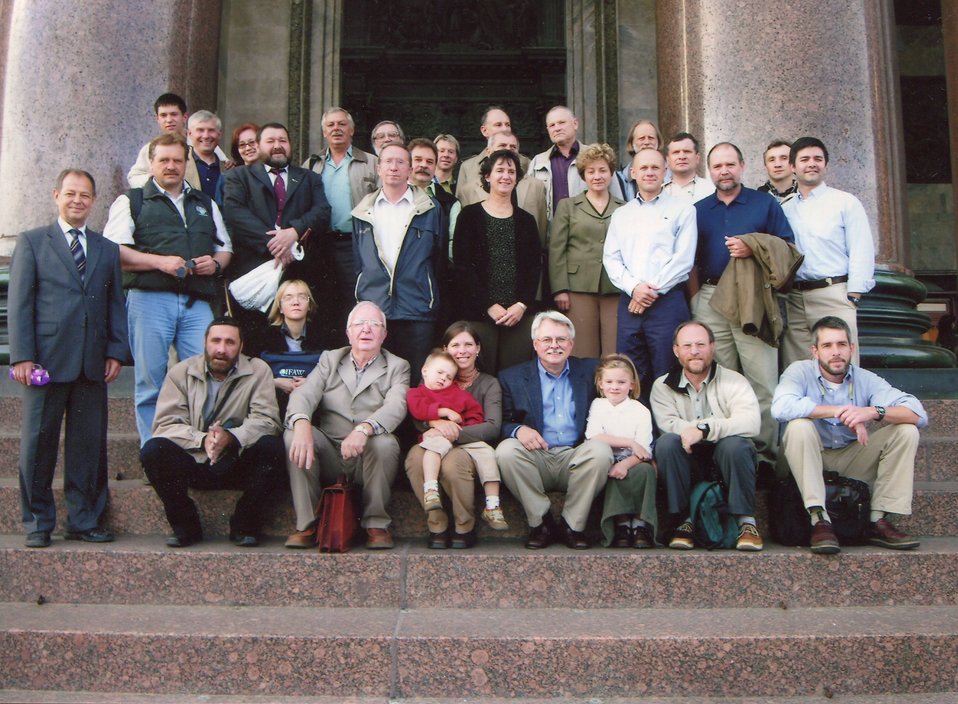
Marine Mammal Working Group

19th meeting of the U.S.-Russia Marine Mammal Working Group held in St. Petersburg, Russia in Sept. 2006.